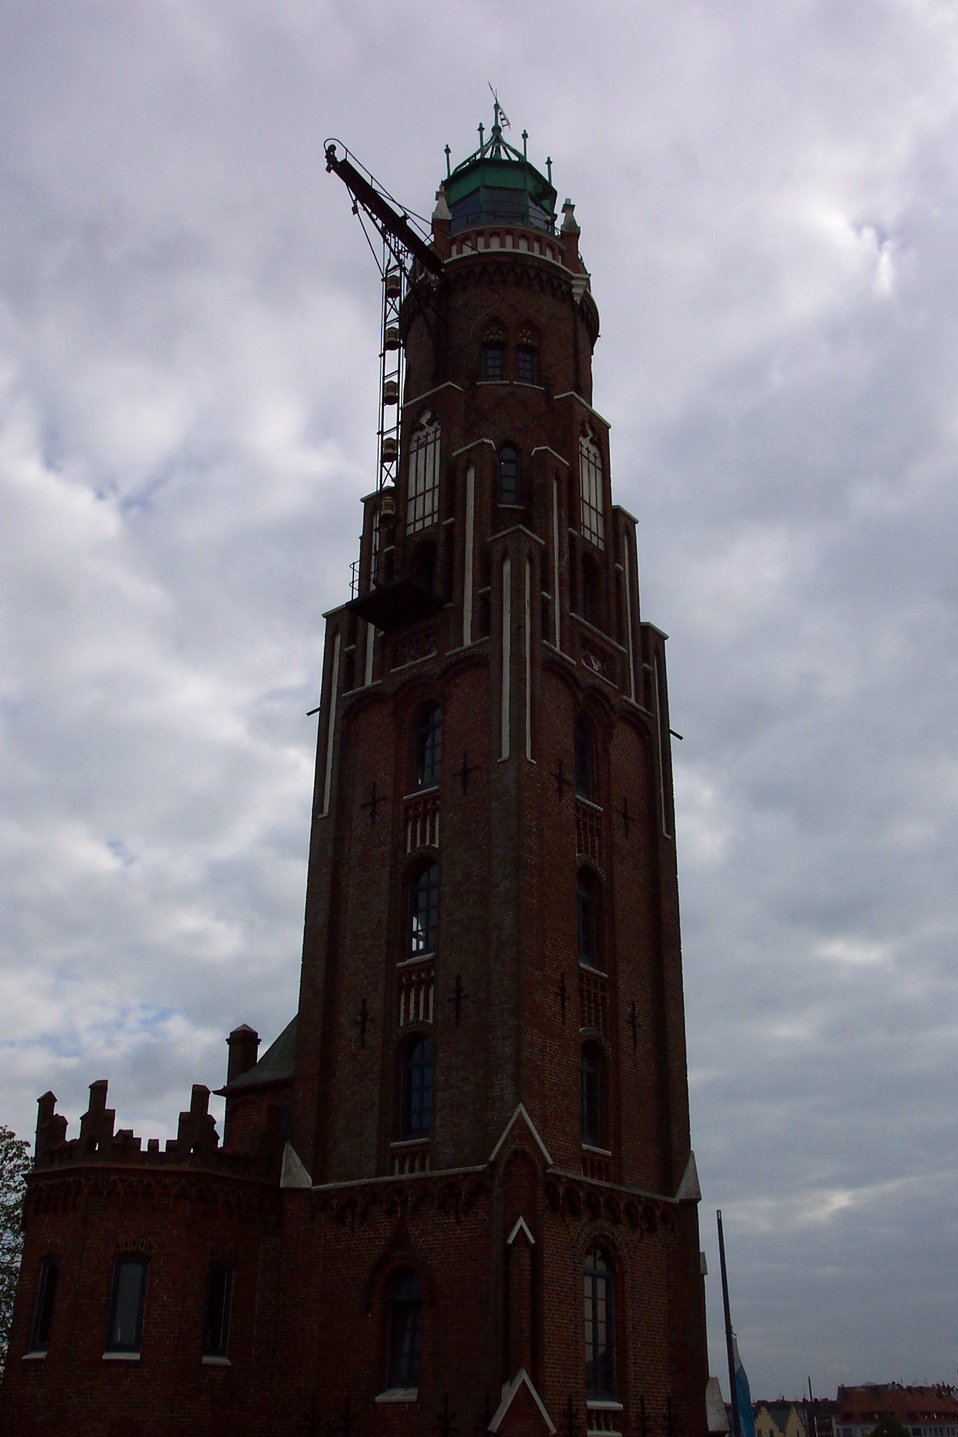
The Bremerhaven Lighthouse.